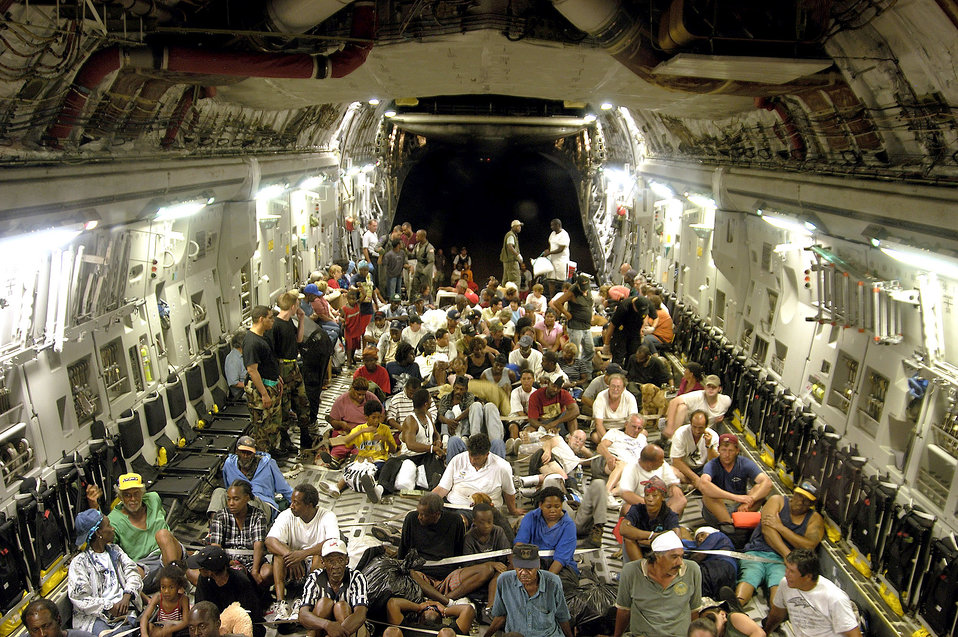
Humanitarian mission

ONBOARD A C-17 GLOBEMASTER III -- More than 140 evacuees from New Orleans, victims of flooding caused by Hurricane Katrina, flew to Austin, Texas. There, they were given food, fresh water and a place to sleep.